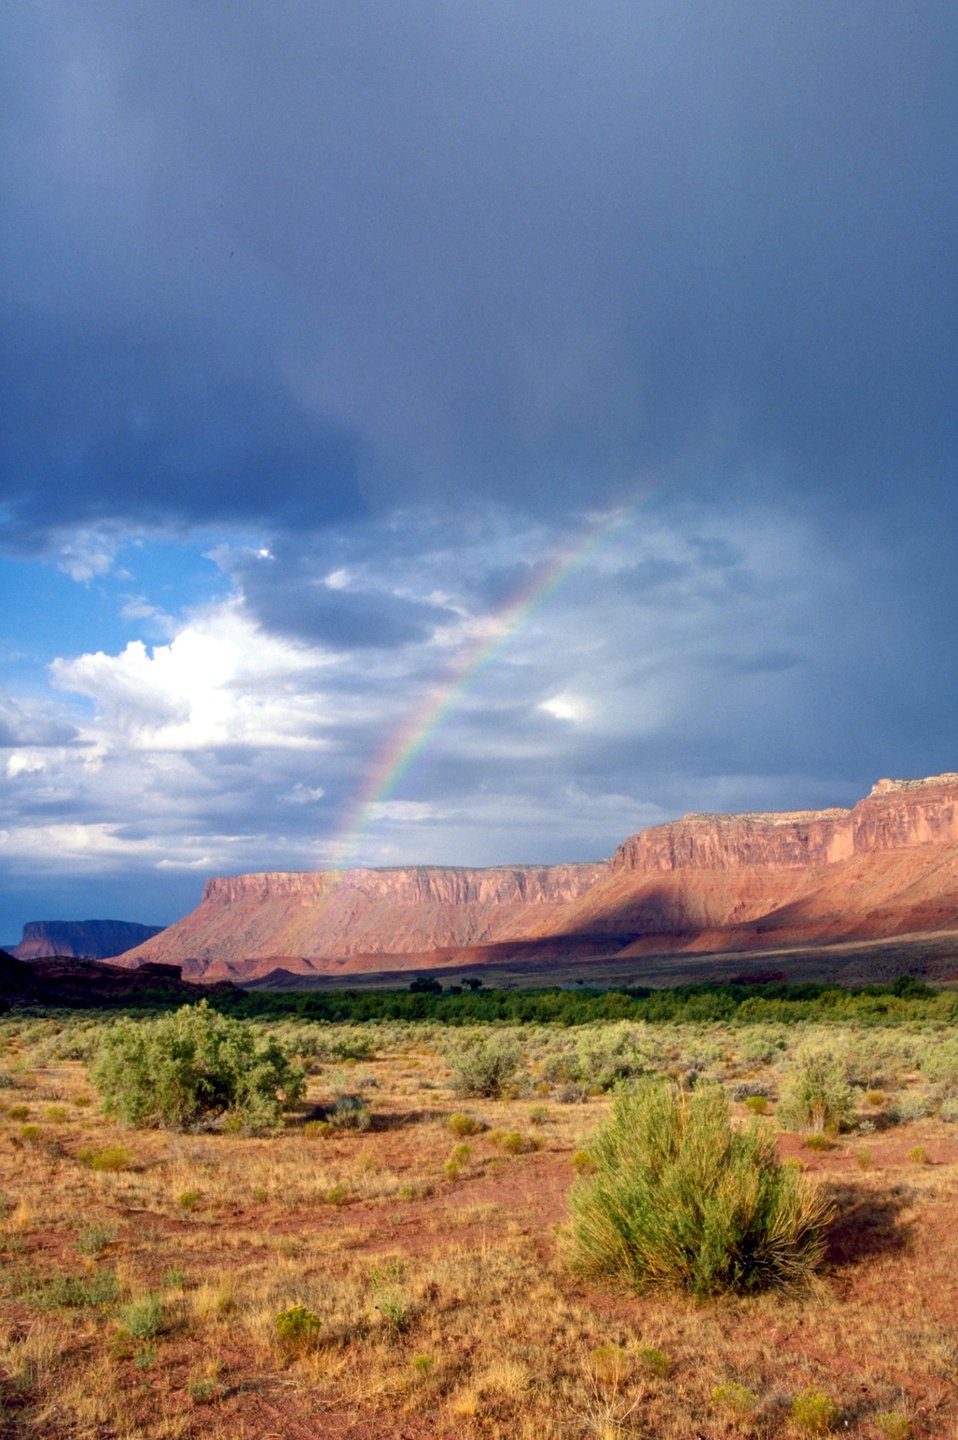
Rainbow along Colorado Riverway Highway 128 near Moab, Utah.